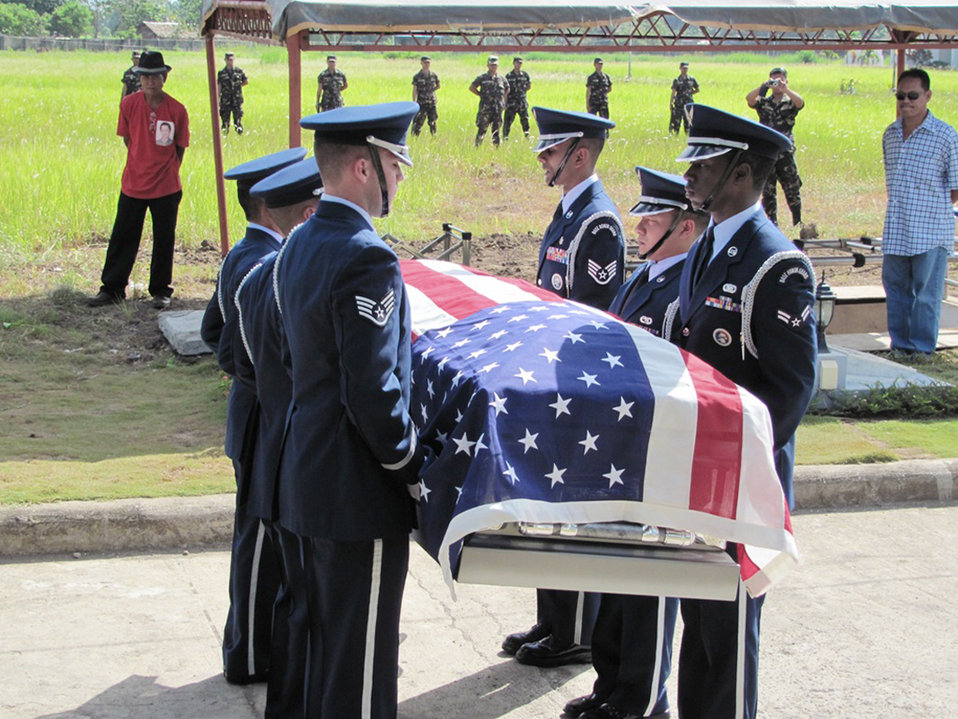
U.S., Philippine officials provide final resting place for Airman

Members of the Kadena Air Base Honor Guard hold the flag-draped casket of Tech. Sgt. Raymond Natividad during a funeral detail April 27, 2010, in Bacolod, Philippines.